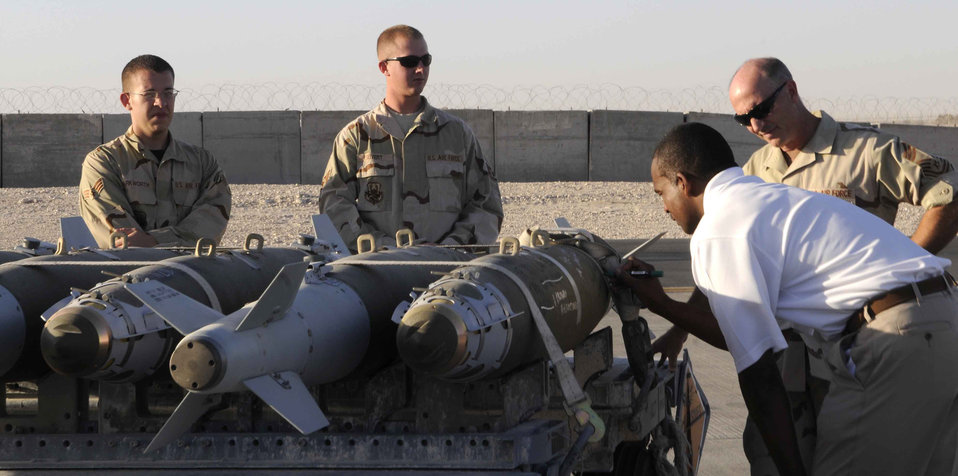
NCAA coaches 'touchdown' in AOR

University of Miami head coach Randy Shannon signs a munition with 379th Expeditionary Aircraft Maintenance Squadron specialists Senior Airman Doug Markworth and Staff Sgt. Christopher Seivert during the NCAA coaches tour in Southwest Asia May 22.